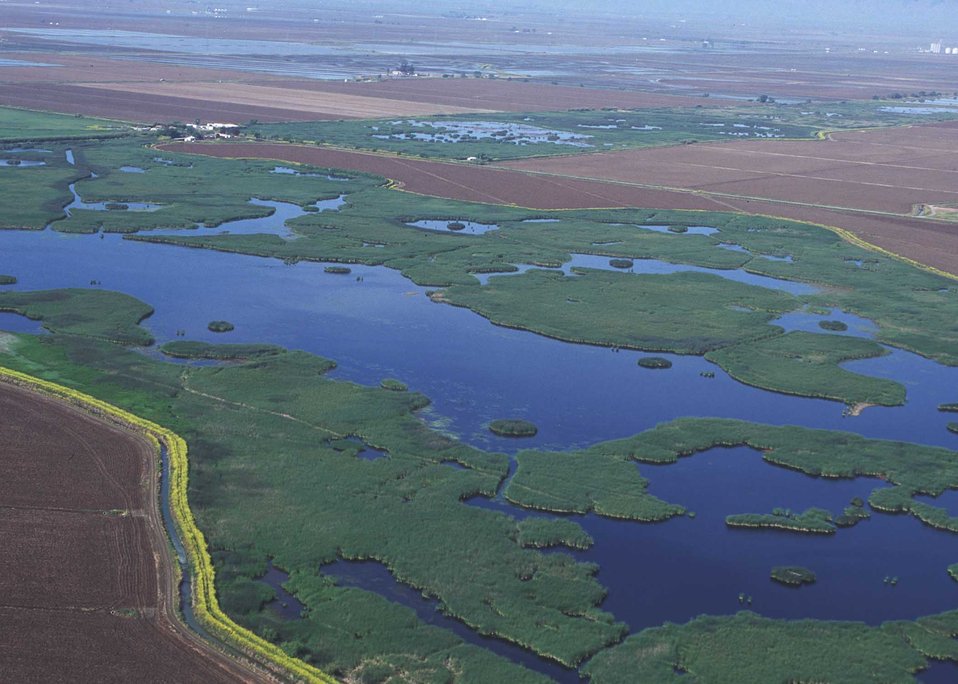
Aerial of wetlands in Butte County, CA.